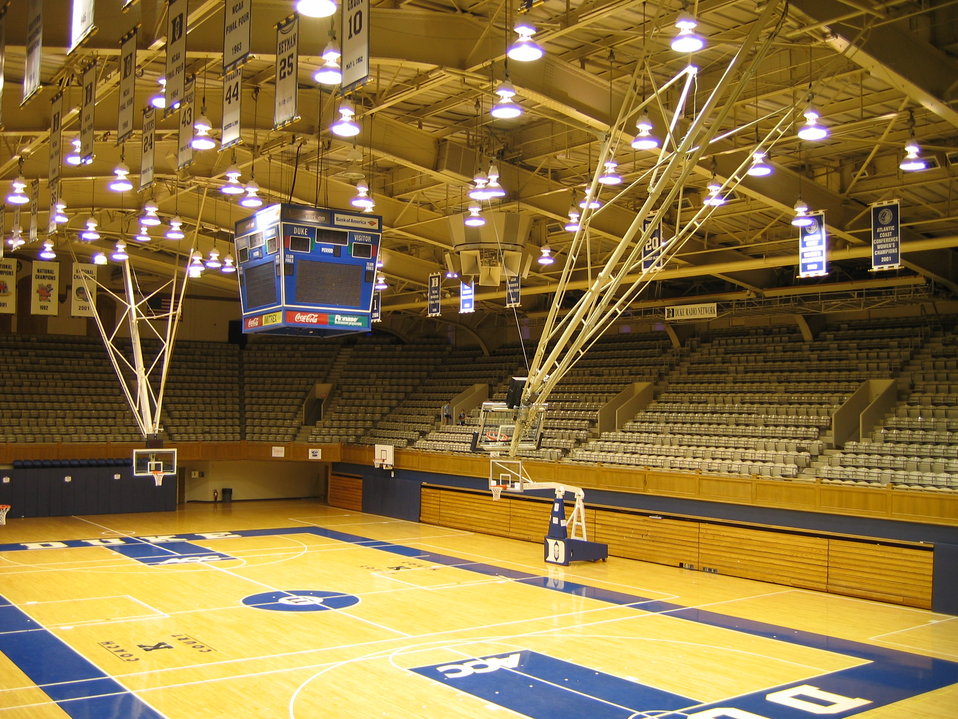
Duke's famous Cameron Indoor Stadium. Summer of 2006.